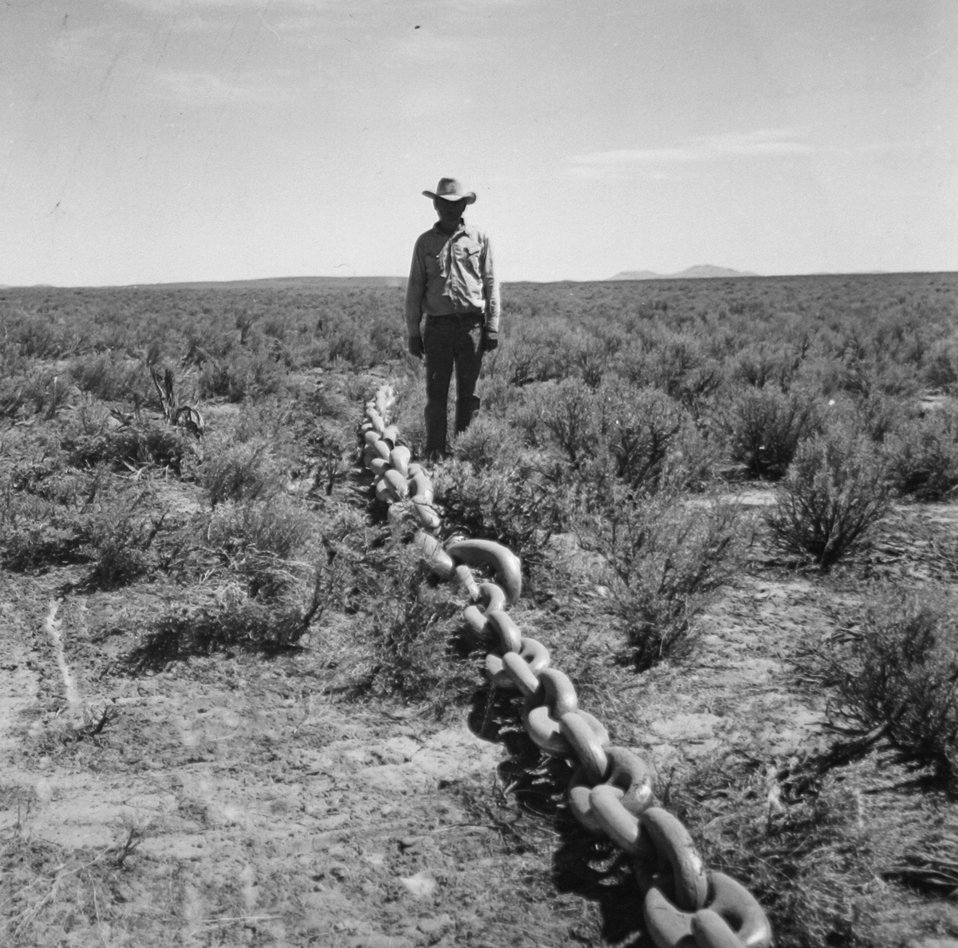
2164 8-17-60 Howard R. DeLano Chaining operation south of sod House, Burns Grazing District, Henry Smith, Improvement Foreman